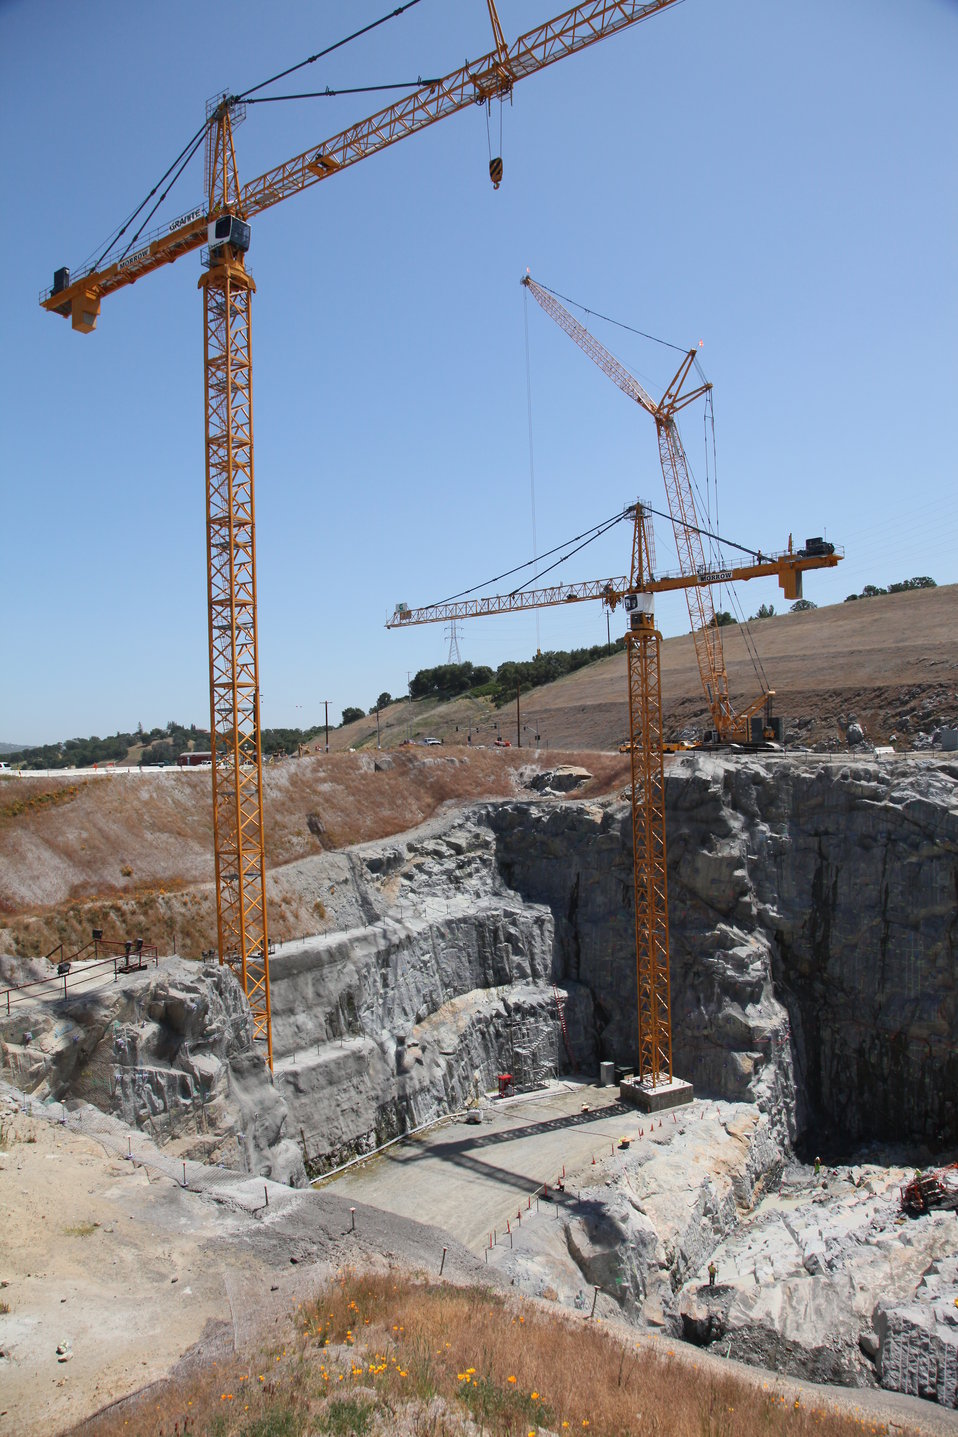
Cranes erected at the Folsom auxiliary spillway

Two tower cranes, erected by contractors for the U.S. Army Corps of Engineers Sacramento District, stand inside the construction site for the Folsom Dam auxiliary spillway in Folsom, Calif., May 10, 2012. A movable crane, used to erect the two tower cranes can be seen in the background. A total of three cranes will be used in lifting form work, rebar and concrete in constructing the spillway starting later in May. The Sacramento District has shifted its focus to construction of the spillway's control structure, which is essentially a second dam. The spillway is scheduled to be ready for use in 2017 and will allow Folsom Dam to release water sooner and more safely, helping reduce flood risk for the Sacramento region.